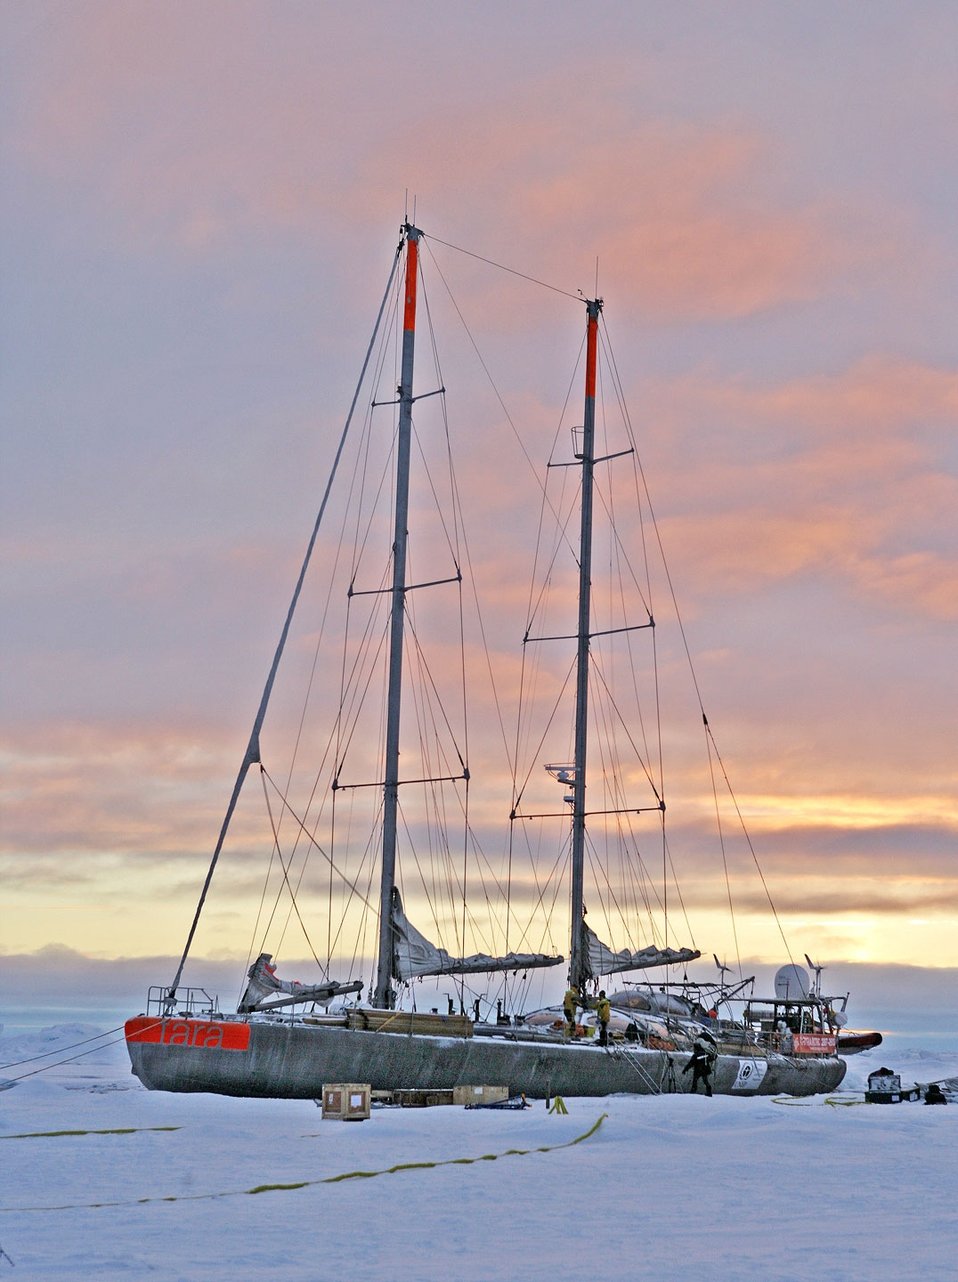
The French sailing vessel TARA which will intentionally be frozen in the ice for two years in order to conduct Arctic climate and oceanographic studies.